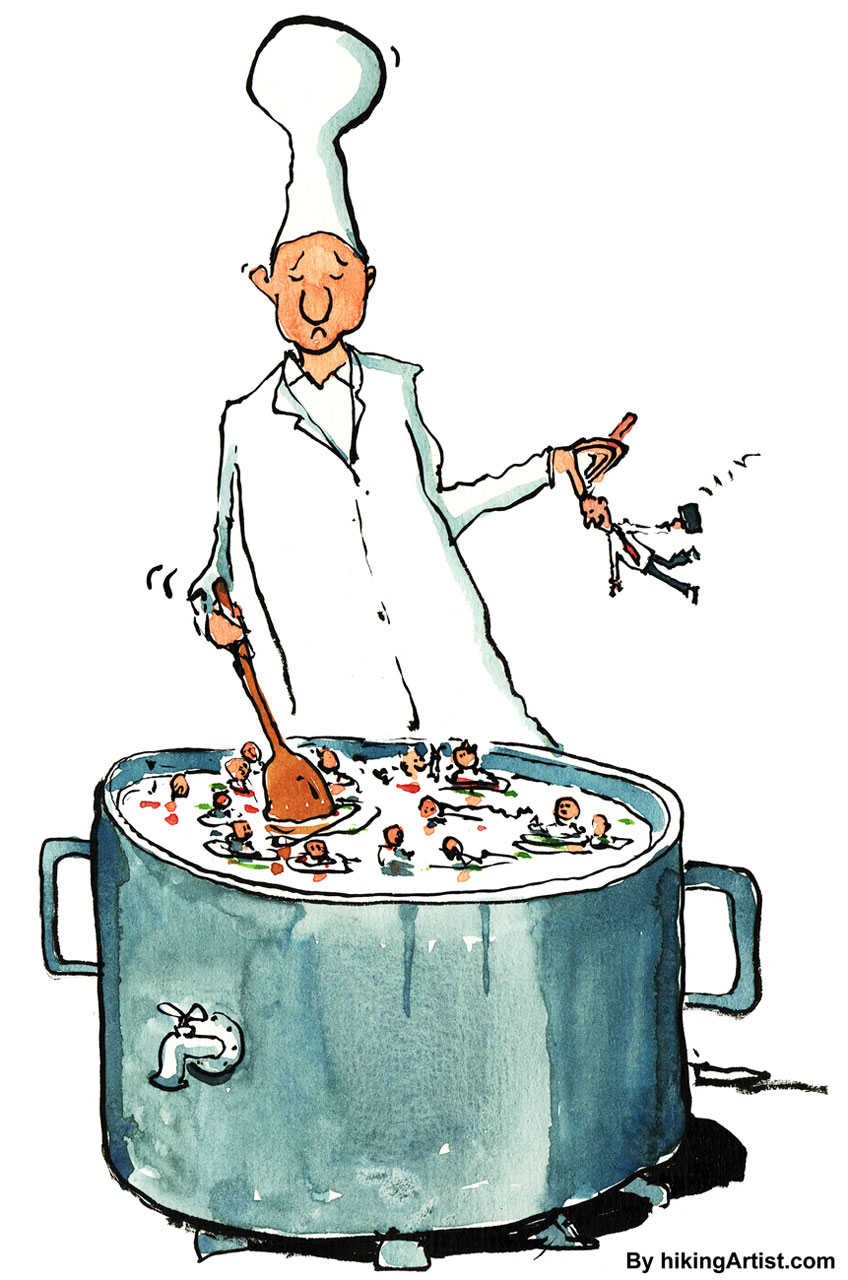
Team recipe

How to cook up a good team.